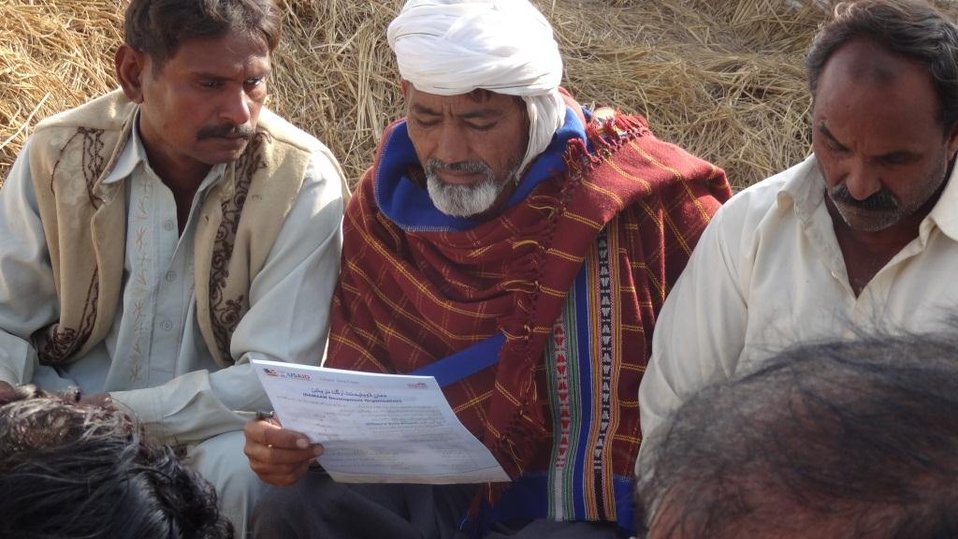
Caption 5: Damaan - Vihari Punjab - Community Awareness on Water Rights

Farmers in district Vehari, Punjab can be seen participating in an a awareness program on water rights organized by DAMAAN Development Organization under USAID’s Citizens’ Voice Project. DAMAAN is working on the thematic area of ‘Improving Water Rights’.